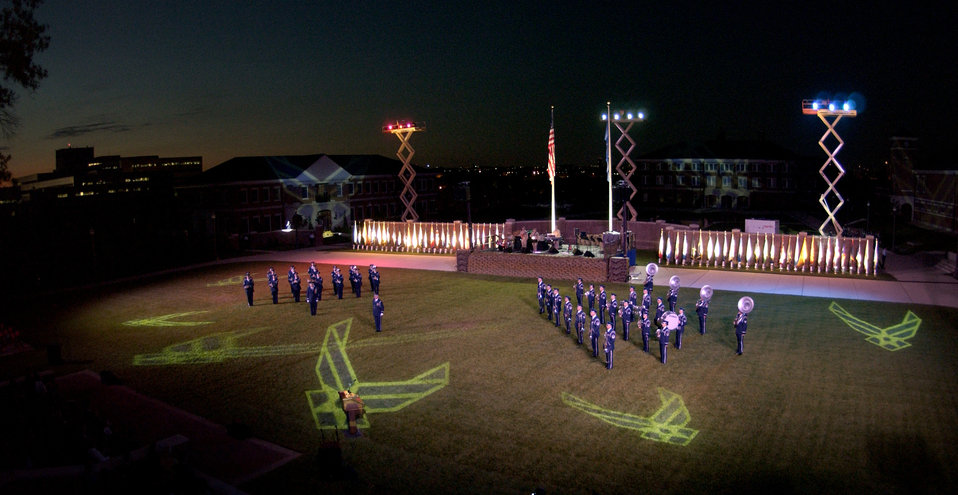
U.S. Air Force Tattoo Ceremony

BOLLING AIR FORCE BASE, D.C. -- The U.S. Air Force Honor Guard Drill Team and U.S. Air Force Band line the ceremonial lawn during a performance for the U.S. Air Force Tattoo Ceremony here Oct. 5. The tattoo is a 300-year-old tradition held worldwide, showcasing the excellence and readiness of servicemembers. During the ceremony, Airmen exhibit the precision and teamwork essential for mission success.